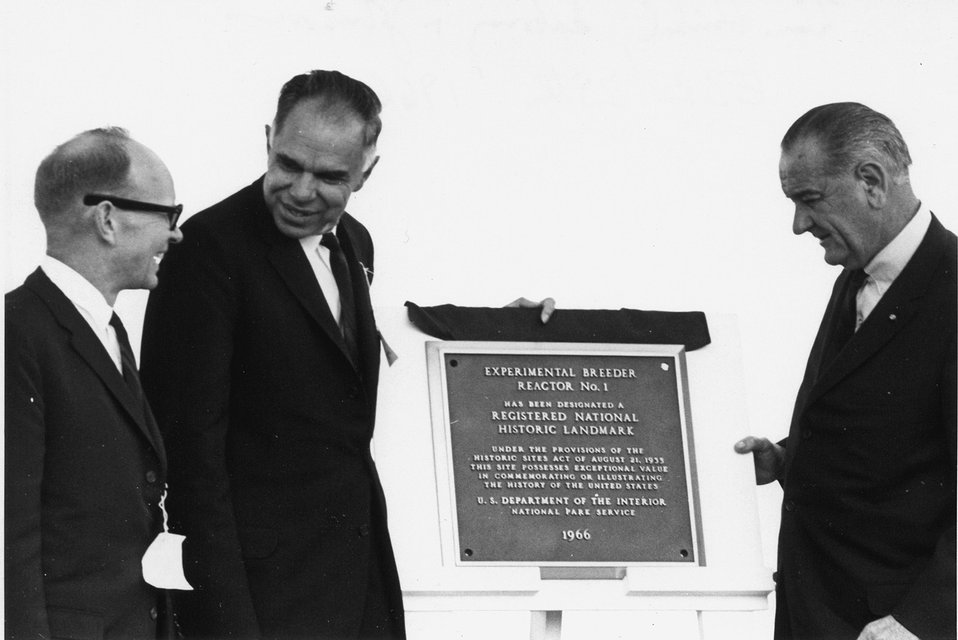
EBR-1 25th. c. 1966